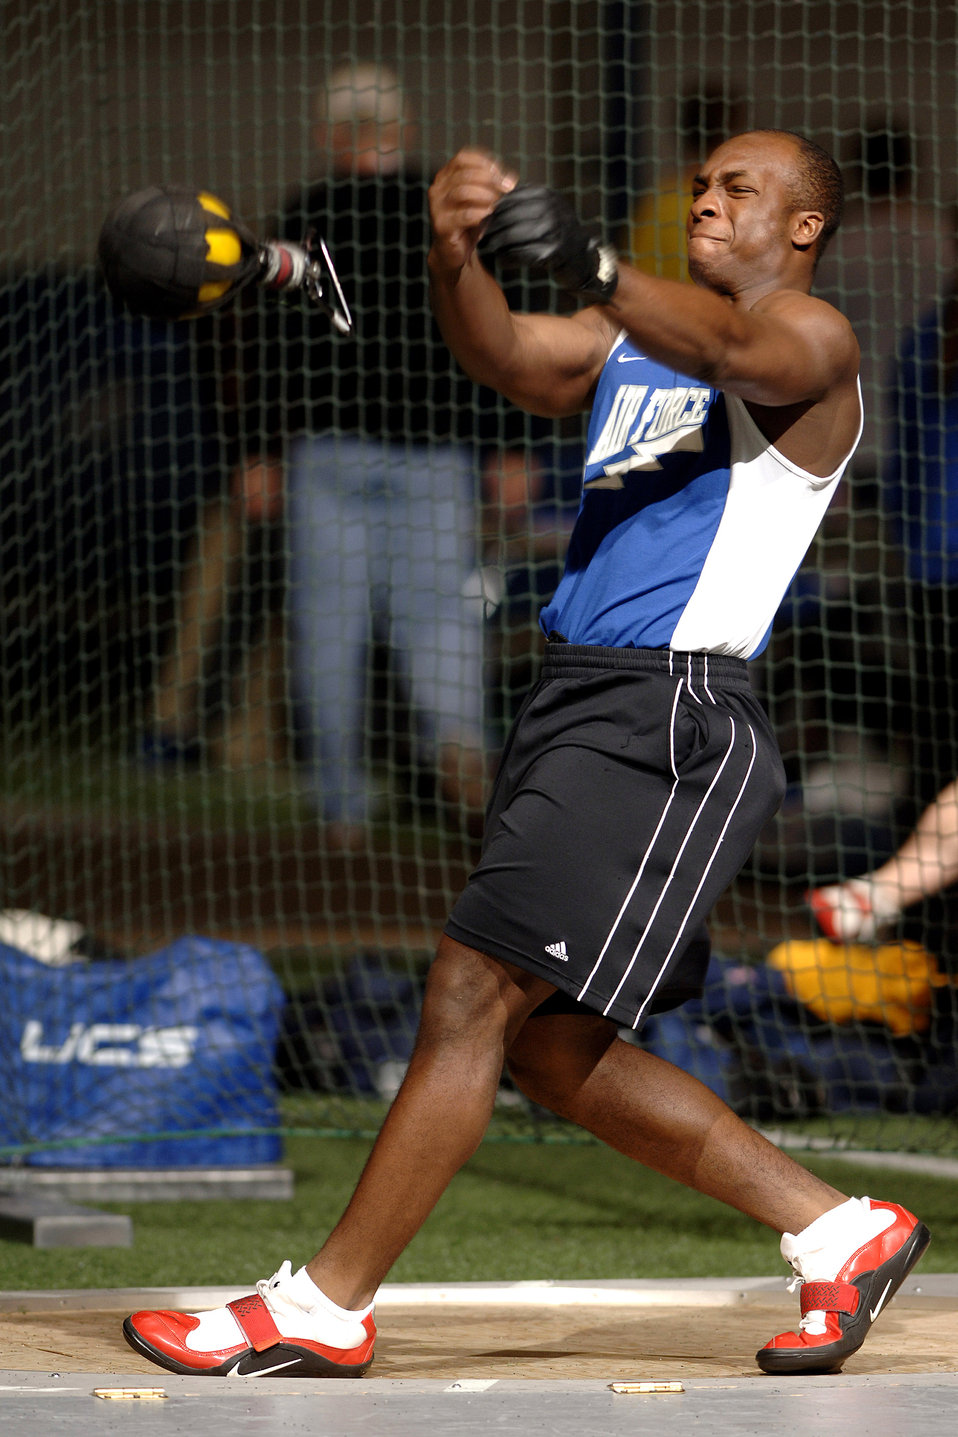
Heavy throw

U.S. Air Force Academy Falcon junior Ian Hurdle lets loose in the weight throw competition during the annual Air Force All-Comers Meet Jan. 13 at Colorado Springs, Colo. Hurdle finished fifth, recording a distance of 49 feet 11 inches.